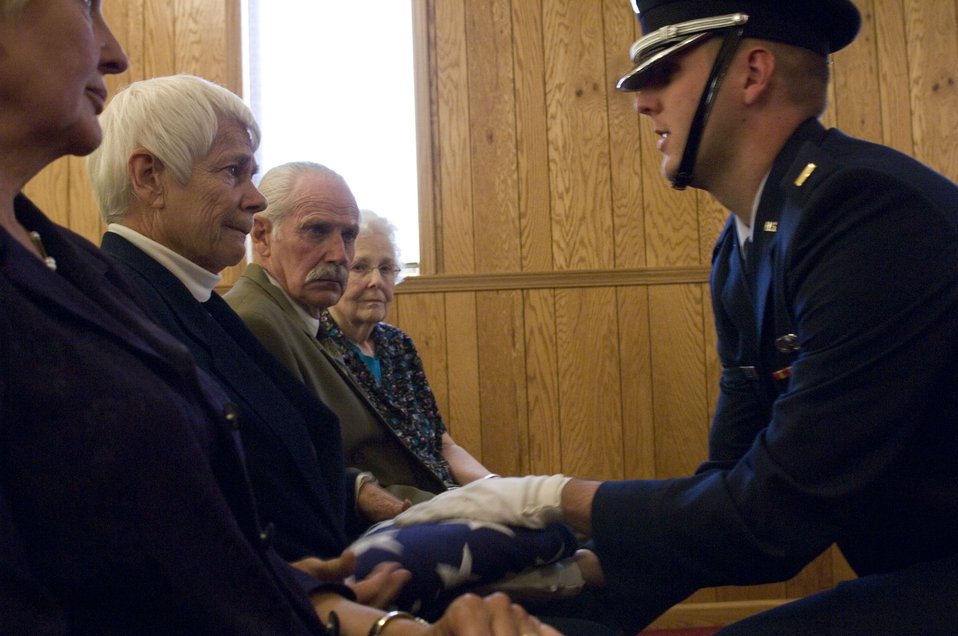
Siblings honor brother's sacrifice

Martha Sweney, accompanied by her brother and sisters, receives the U.S. flag at her brother's memorial service Oct. 1 near Avon, Ill. Her older brother, 1st Lt. Bruce Sweney, was an Air Force pilot shot down over North Korea in 1951. He is one of 389 still listed as missing in action from the Korean War.